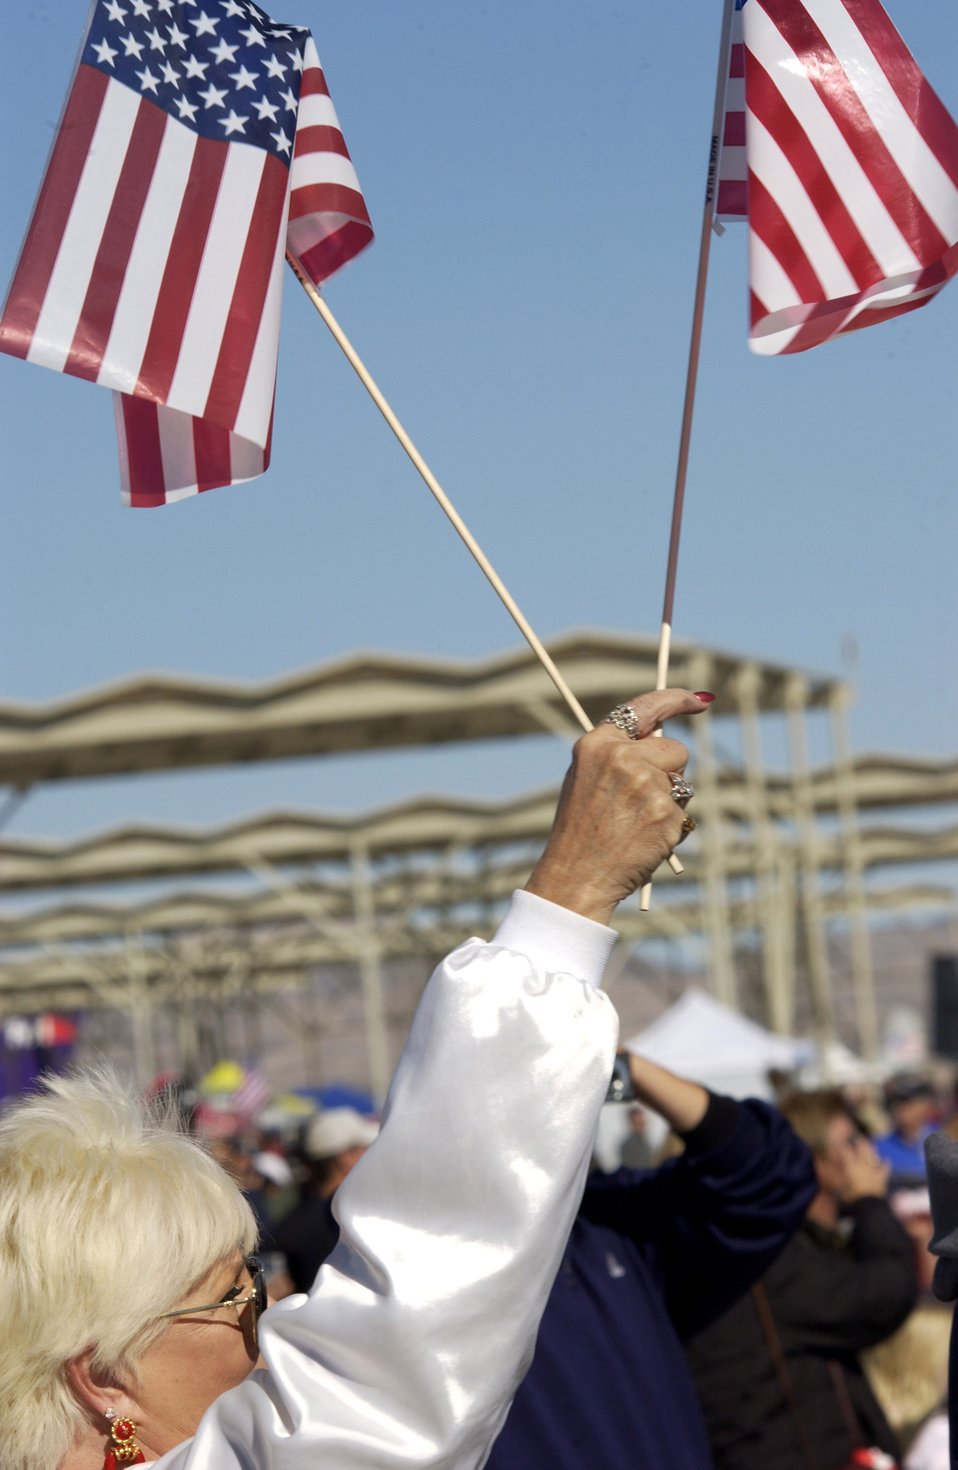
Aviation Nation at Nellis

An air show spectator waves her flags during Aviation Nation 2006 Nov. 12 at Nellis Air Force Base, Nev. The show was held Nov. 11 and 12.